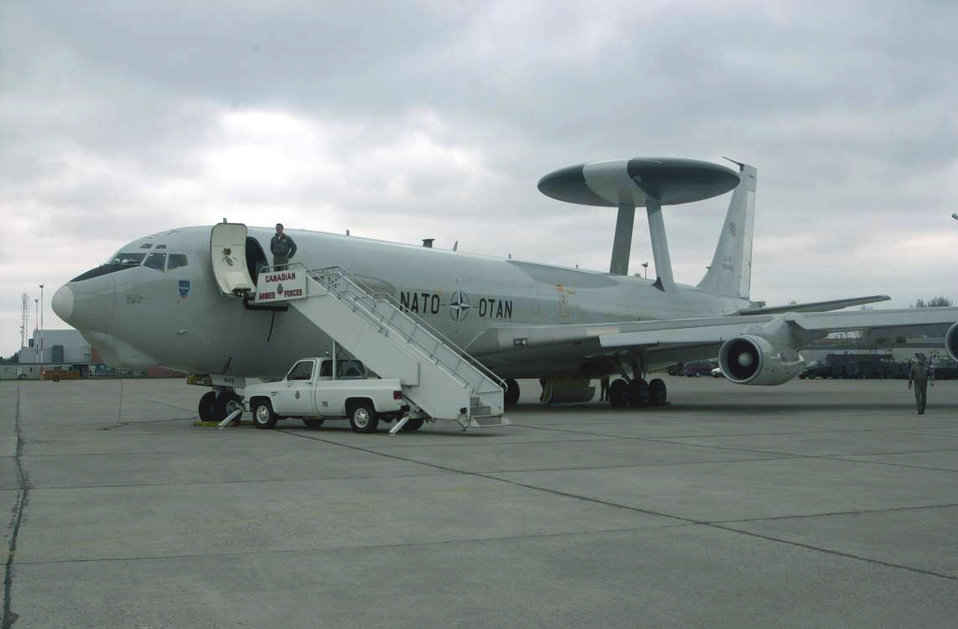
NATO E-3A Airborne Warning and Control System

COLD LAKE, Alberta -- German air force Staff Sgt. Chris Arens, a NATO communications technician, stands at the entrance to the E-3A Airborne Warning and Control System aircraft here. The aircraft and its crew, stationed at NATO Air Base Geilenkirchen, Germany, were here to participate in Maple Flag 37, a multinational air combat exercise.